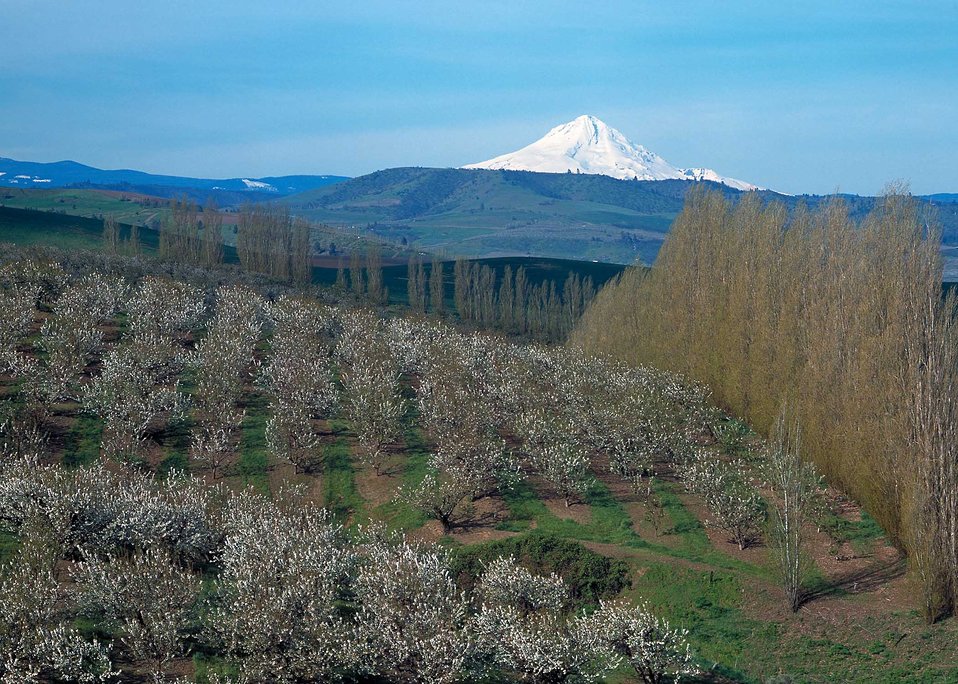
A scenic view of Mt. Hood with cherry orchards and windbreaks in the foreground outside of The Dalles, Oregon.